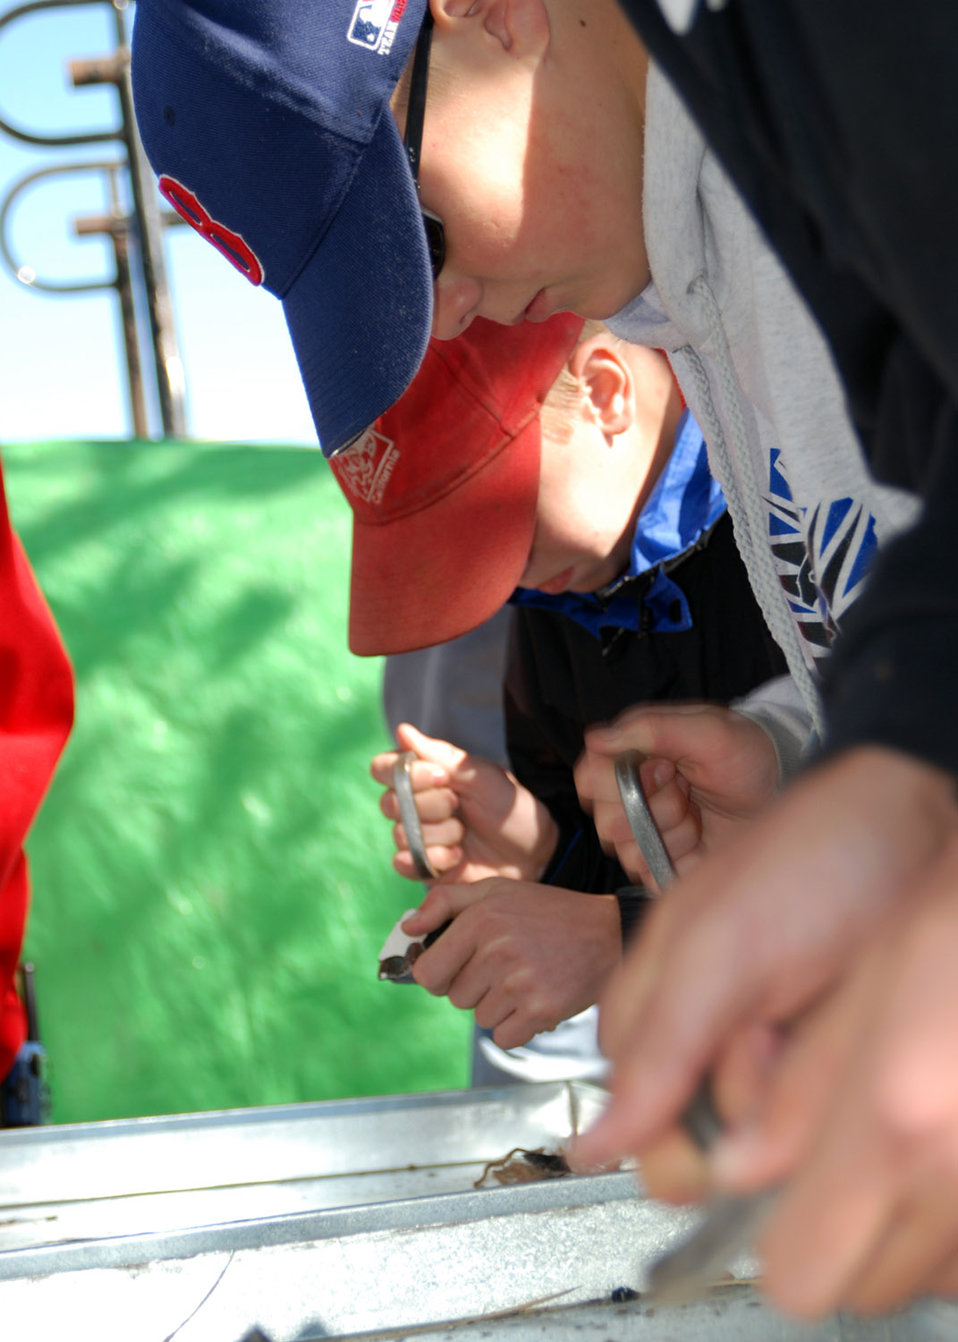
Beale hosts Boy Scout expo

Several Boy Scouts attempt to start a fire using flint rock and steel during the 2007 Boy Scout Expo Sept. 29 at Beale Air Force Base, Calif.